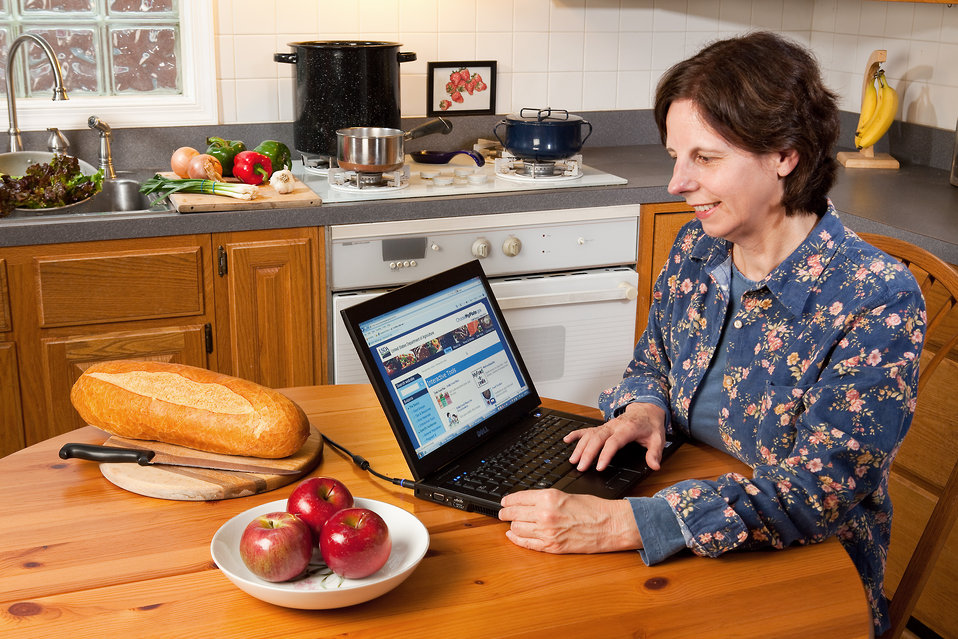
A consumer uses the U.S. Department of Agriculture’s (USDA) ChooseMyPlate.gov website on Dec. 14, 2011. This is an interactive website used for creating customized healthy dietary plans that include required daily vitamins and minerals, and age and gender appropriate daily portions and calorie levels. Users can also tap tools called “Daily Food Plan,” “SuperTracker,” and “Food-a-Pedia” on this site.